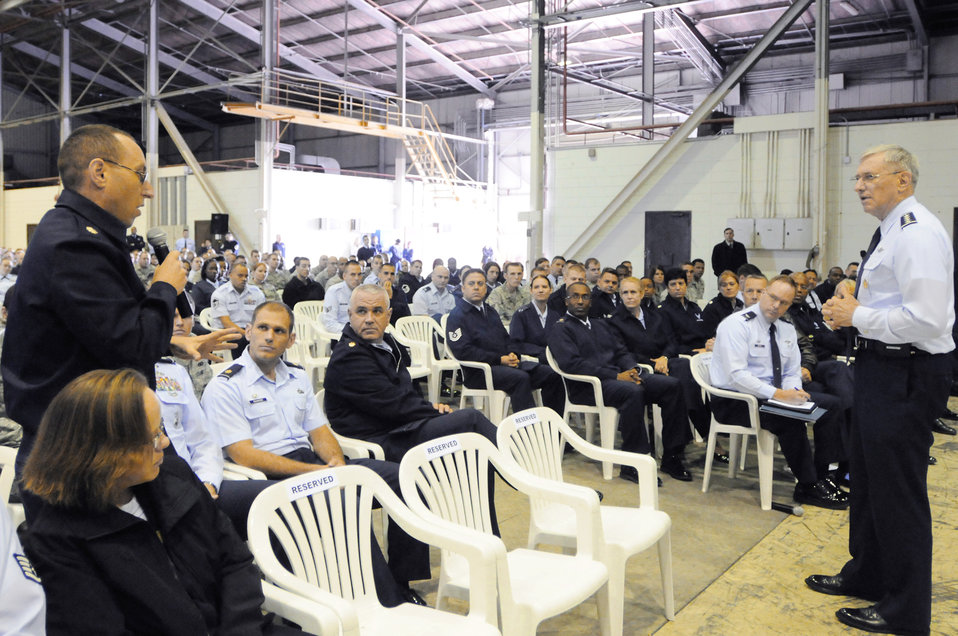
General visits Incirlik Airmen

Maj. Jeffrey Katzman asks Gen. Roger A. Brady an aircraft question during a commander's all-call Jan. 25, 2010, at Incirlik Air Base, Turkey. Major Katzman is assigned to 39th Air Base Wing plans and programs. General Brady is the U.S. Air Forces in Europe commander.